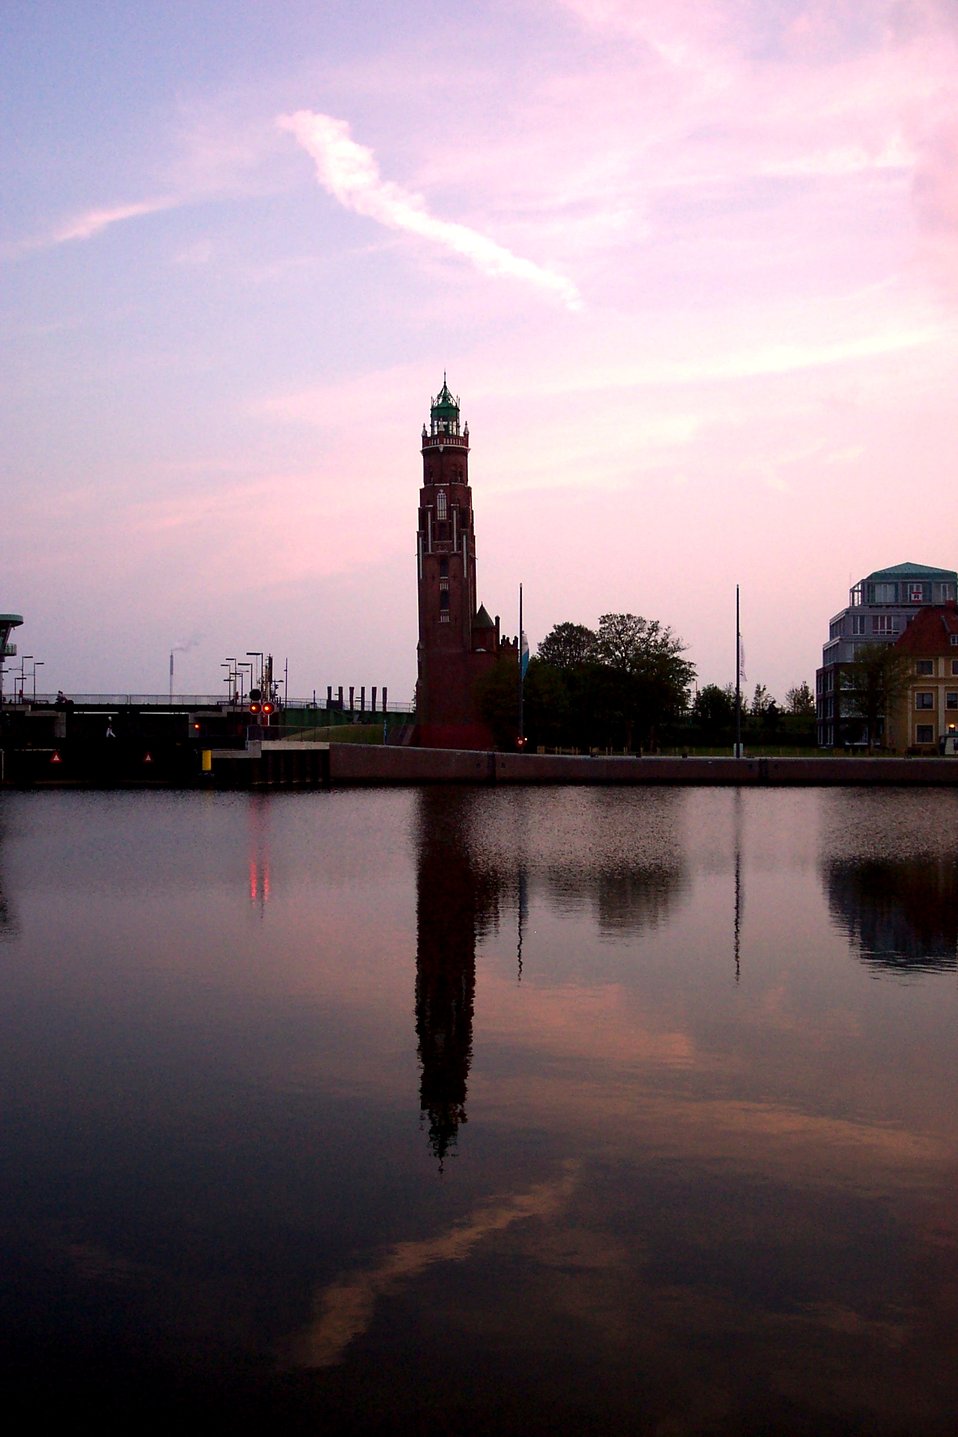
The Bremerhaven Lighthouse reflected in the water.